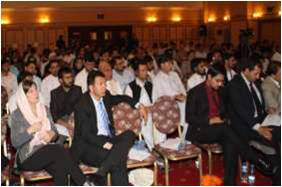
Afghan Businesses Learn about 'Afghan First'